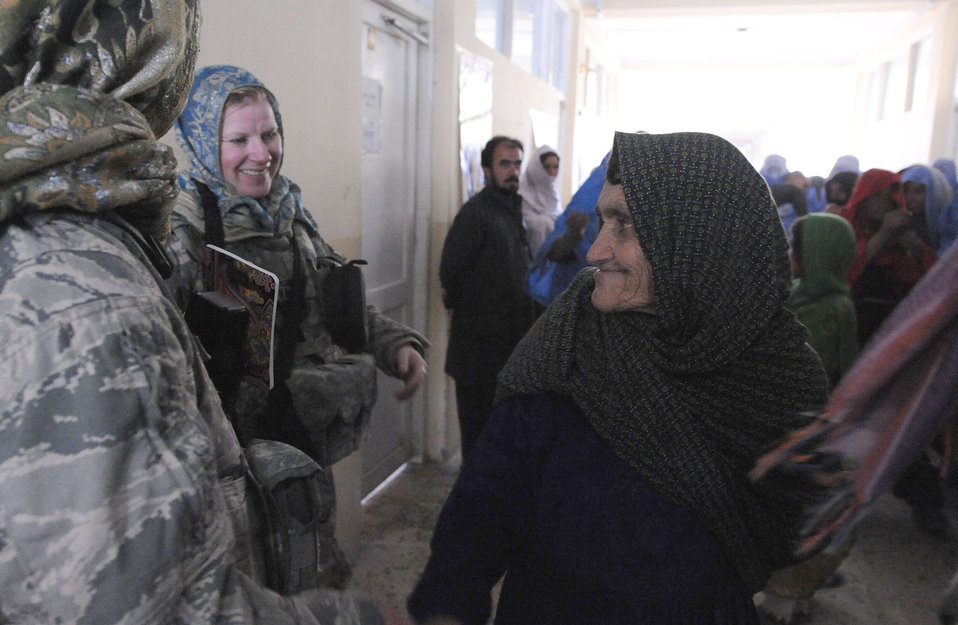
Shura gives voice to women's role in Paktika

(Left to right) 1st Lt. Emily Chilson and Army Sgt. Peggy Hart greet an Afghan woman April 25, 2011, in Urgun, Afghanistan, during the first women's shura. Lieutenant Chilson and Sergeant Hart are female engagement team members.